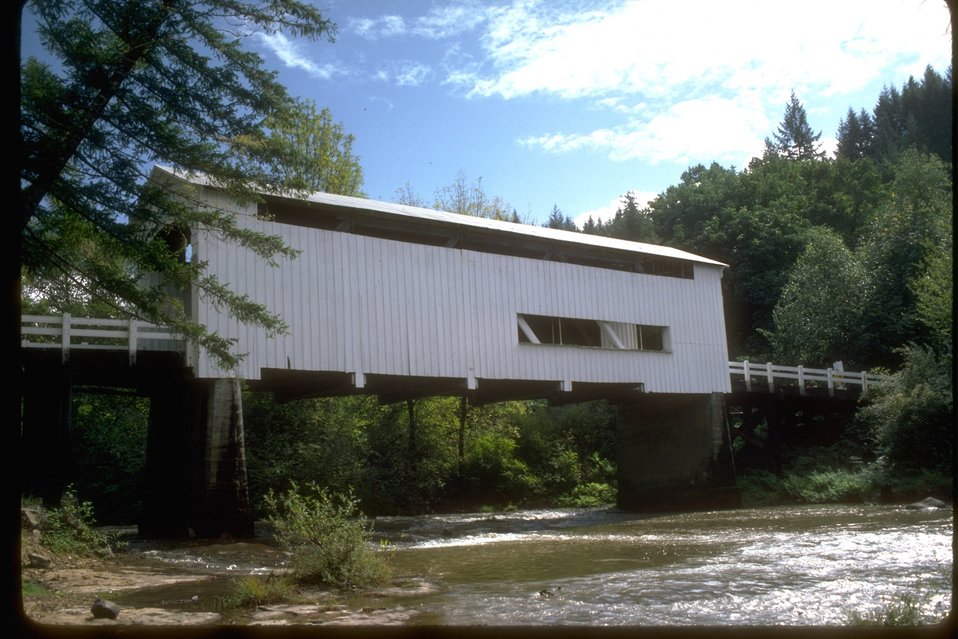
Wildcat Covered Bridge on the Siuslaw River.